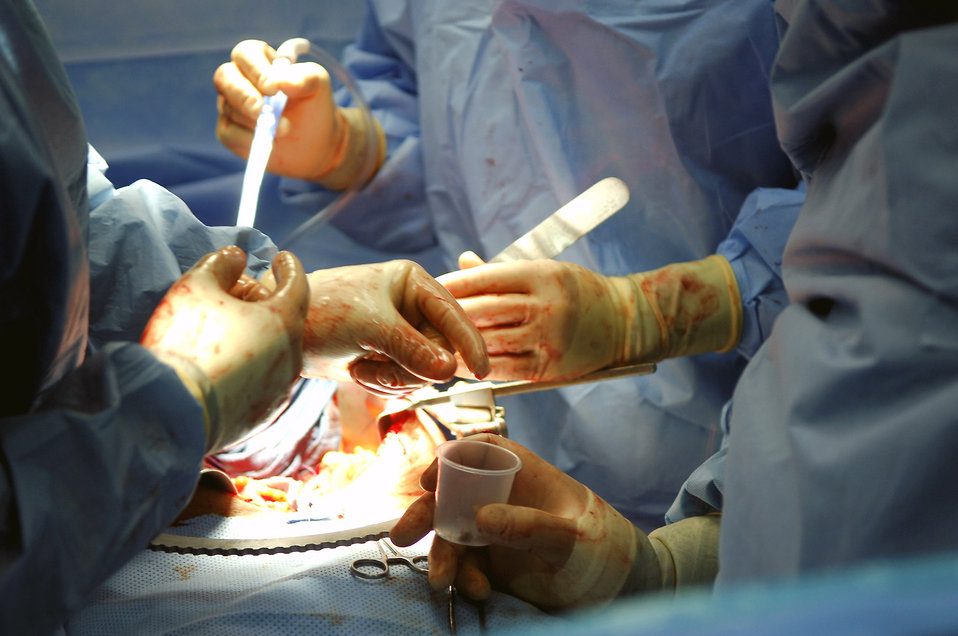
Tiny stones cause boulder-sized pain for deployed servicemembers

Col. (Dr.) John Mansfield performs surgery to remove kidney stones from a patient at the Air Force Theater Hospital at Balad Air Base, Iraq, March 26. In the most severe cases of kidney stone disease, stones that are too large to be broken up with laser treatment, must be physically removed from the kidneys. Colonel Mansfield is a 332nd Expeditionary Medical Operations Squadron urologist.